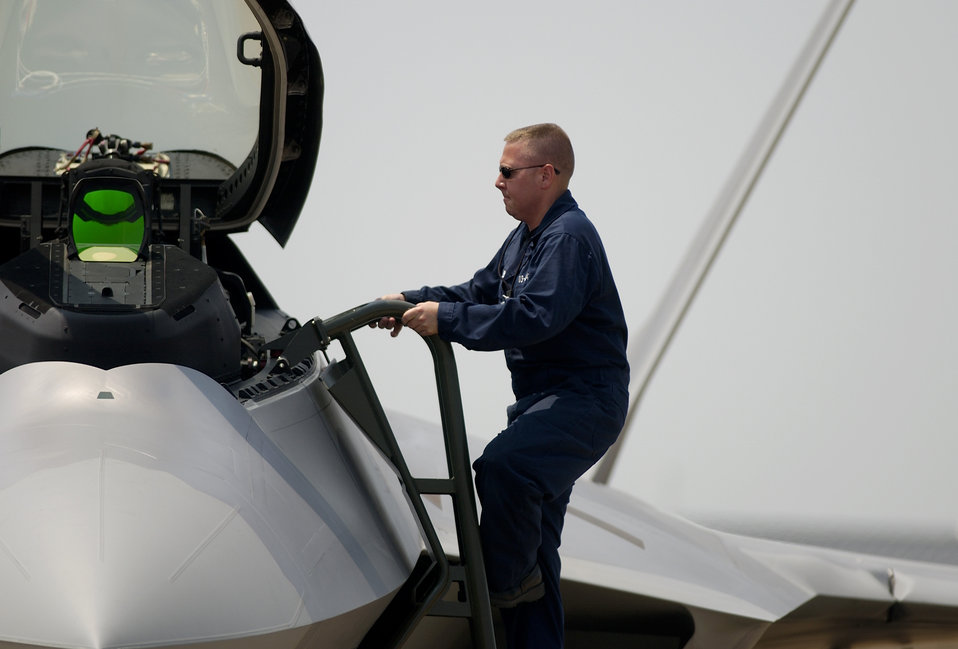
Two more Raptors arrive at Langley

LANGLEY AIR FORCE BASE, Va. -- Staff Sgt. Jason Berry climbs onto an F/A-22 Raptor that was delivered here June 8. The aircraft is the base's third permanent Raptor. Sergeant Berry is a crew chief.